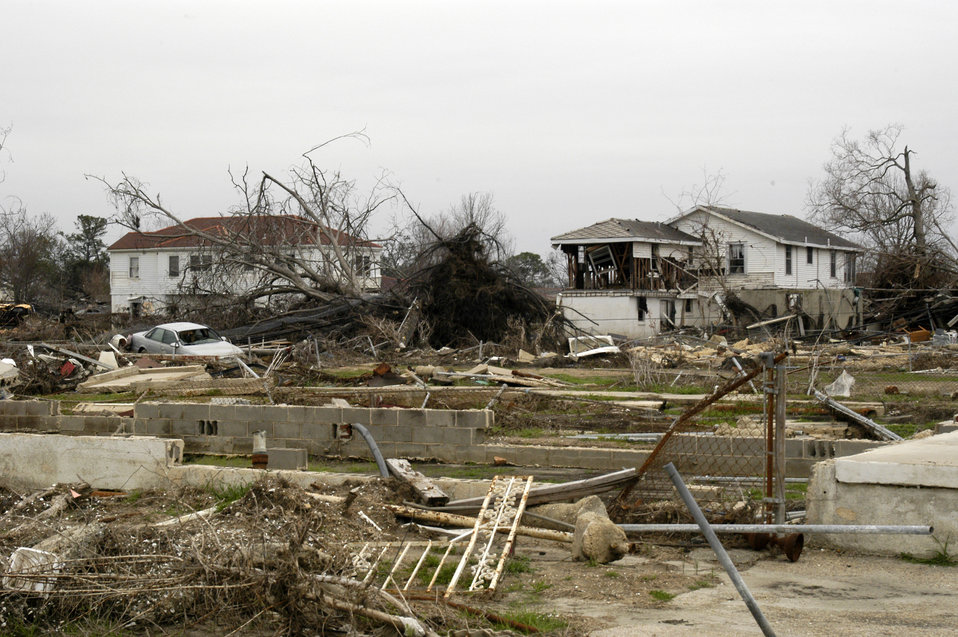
Houses were crushed and swept off their foundations by the flooding from a breached levee in the Ninth Ward, New Orleans, LA, due to the 20-foot storm surge from Hurricane Katrina that overwhelmed the flood control system. Katrina made landfall on Monday morning, August 29, 2005 as a Category 3 hurricane with sustained winds of 125 mph with over a 20-foot storm surge. Katrina caused catastrophic damage over 90 thousand square miles across Louisiana with an estimated $75 billion dollars in damage. The total economic impact to the Gulf Coast was estimated at over $150 billion. 80% of New Orleans, LA, was underwater with some areas more than 20 feet deep. Less than a month later southern Louisiana was struck by a second Category 3 hurricane Rita inflicting more damage in the southwestern areas of Louisiana adding an addition $12 billion worth of damage to the already beleaguered state. The U.S. Army Corps of Engineers (USACE) under the auspices of Federal Emergency Management Agency (FEMA) was the lead service in providing assistance to the citizens of Louisiana. The U.S. Department of Agriculture (USDA) supplied emergency food aid, emergency loan assistance to farmers and home owners, and USDA personnel from around the nation volunteered their time and muscle to aid in the recovery operations.